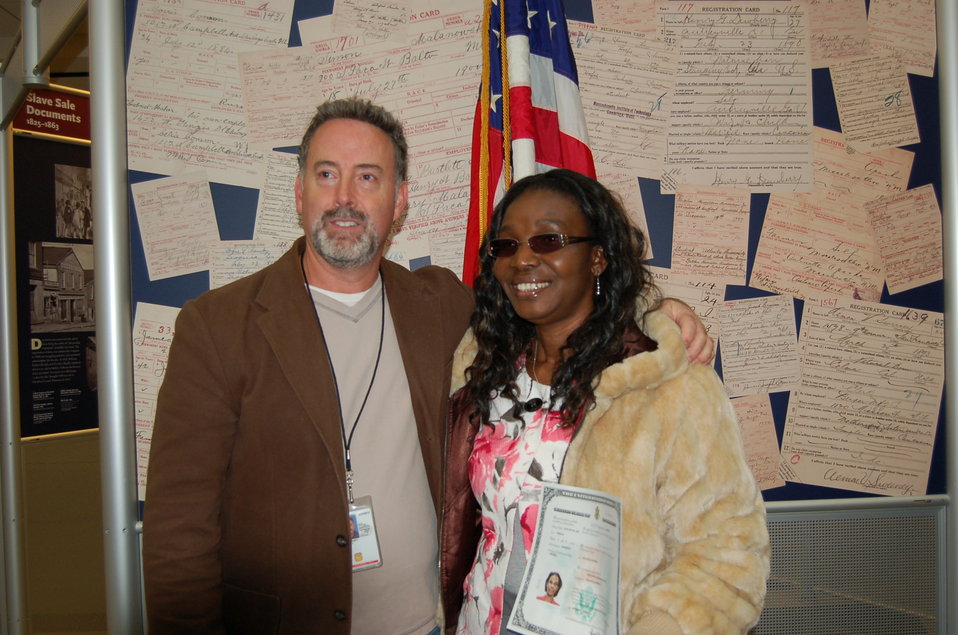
New Citizens